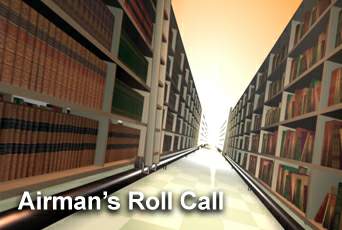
Airman's Roll Call: Post-9/11 G.I. Bill rules outlined

This week's Airman's Roll Call focuses on the proposed transferability rules of the new Post-9/11 G.I. Bill.